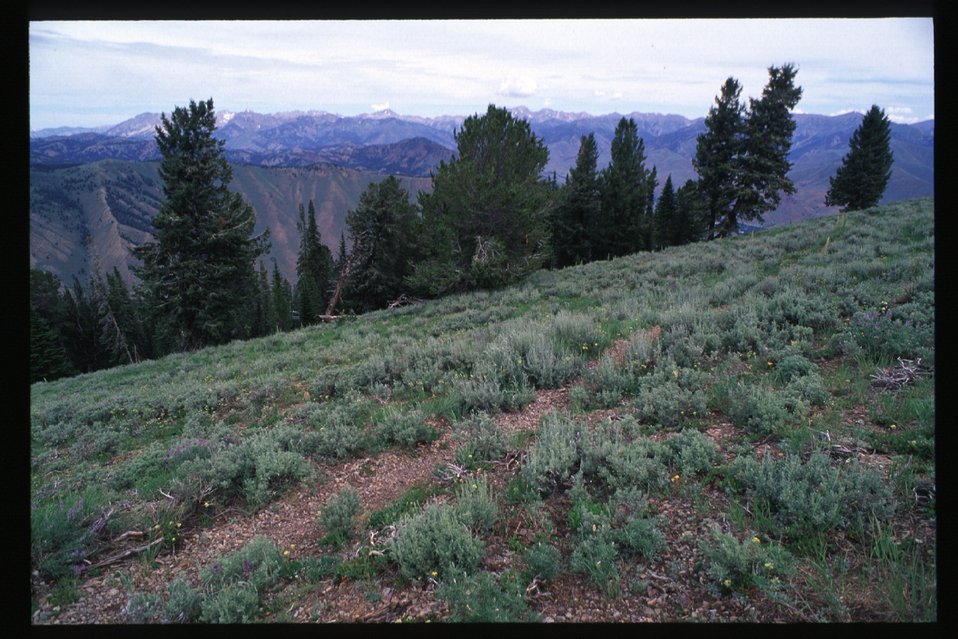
Recreation Scenic Biker Shoshone Field Office USRD Upper Snake River District Bald Mountain Trail